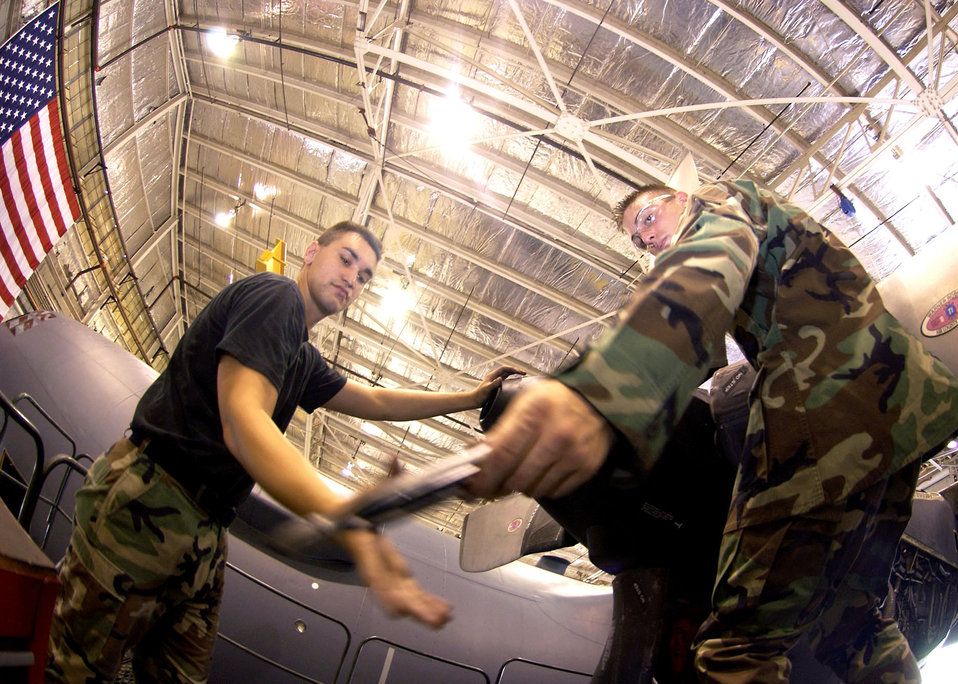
EC-130 tune-up

Airman Nick Sinwell (right) and Staff Sgt. Sam Gaare install safety wire on the dome of the an EC-130 Compass Call propeller at Davis-Monthan Air Force Base, Ariz., on July 18. Both Airmen are assigned to the 355th Equipment Maintenance Squadron.